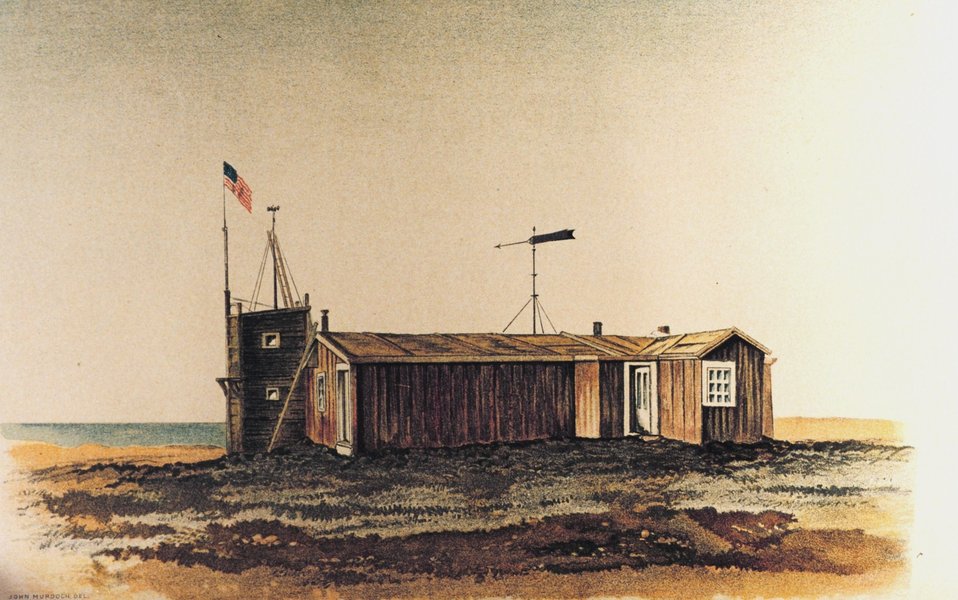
Frontispiece to: 'Report of the International Polar Expedition to Point Barrow . ...' Expedition leader Lieutenant P. H. Ray. Published in 1885. Library Call Number Q115.I6 U6 1885.